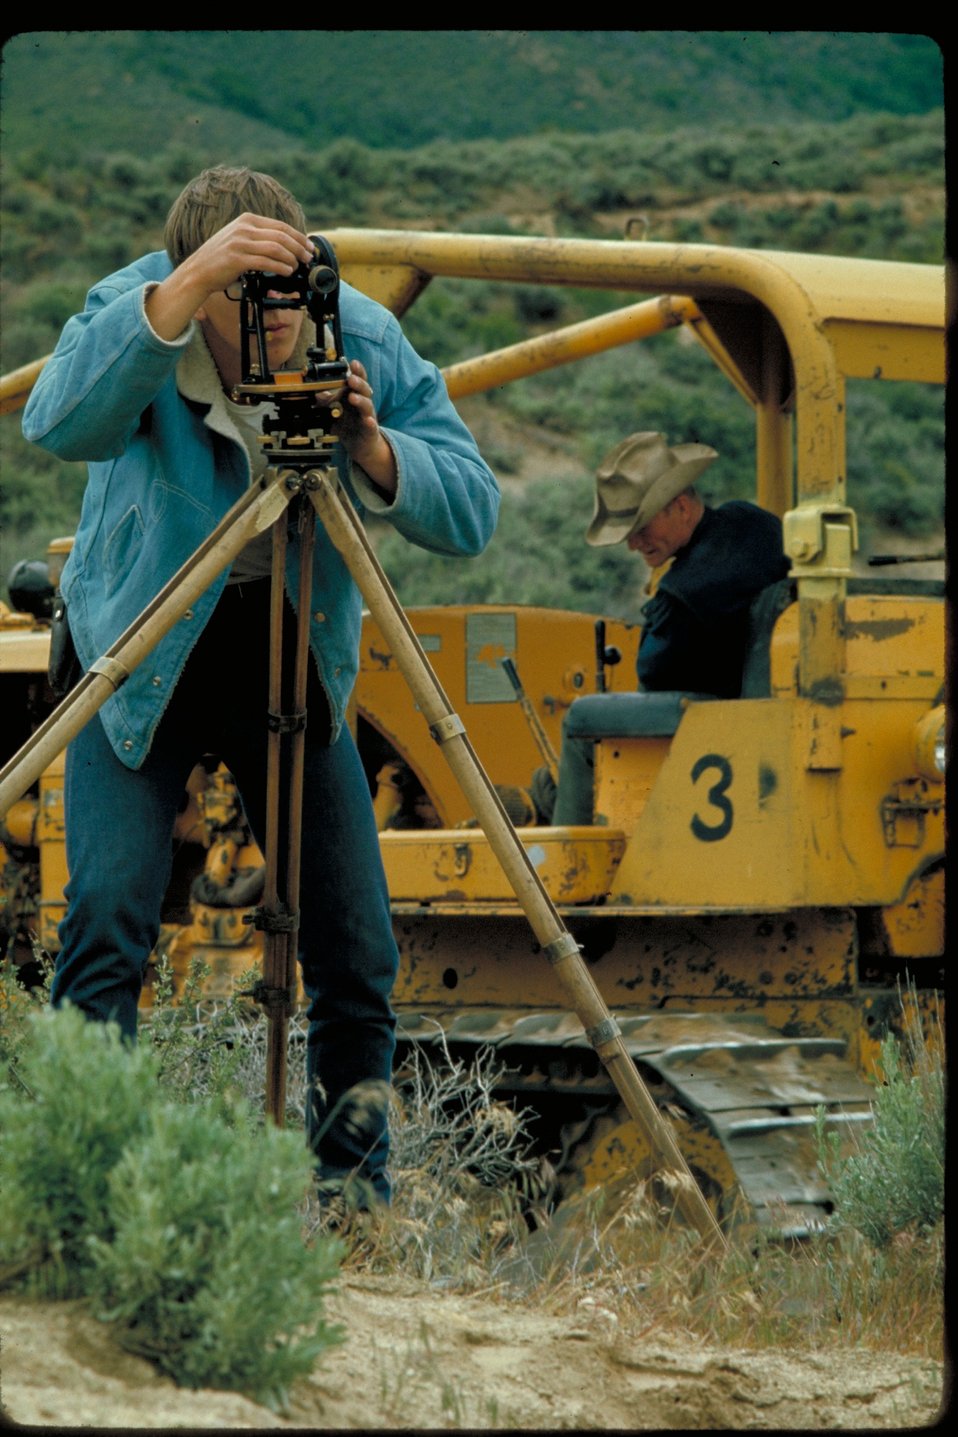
Laying out trenches on 8th St Road Boise Front Four Rivers Field Office LSRD Lower Snake River District